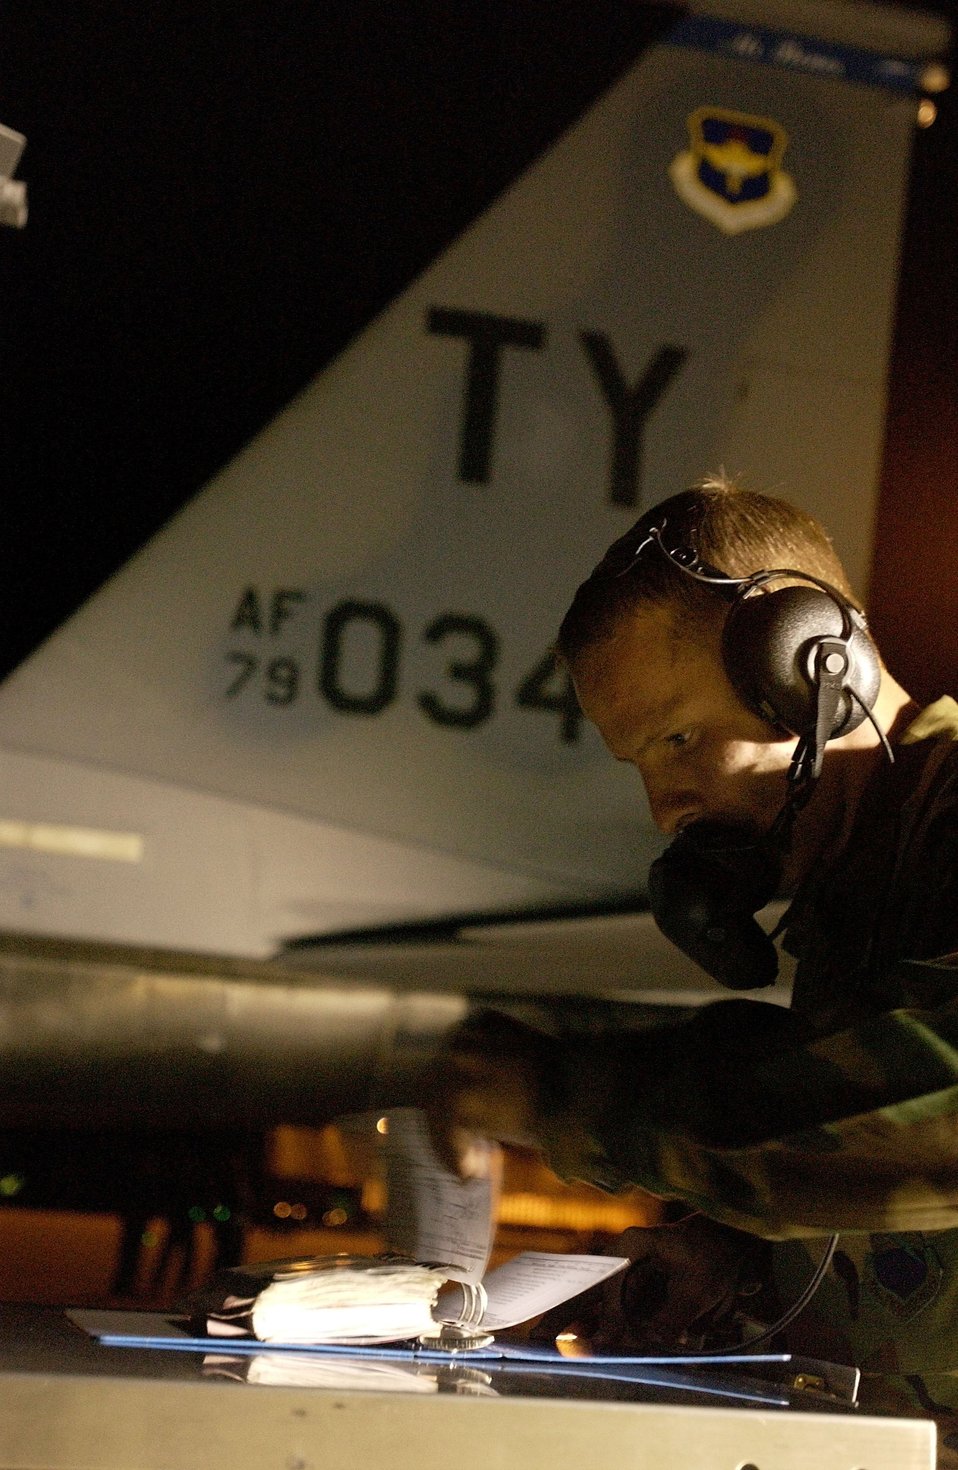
William Tell 2004

TYNDALL AIR FORCE BASE, Fla. -- Senior Airman Audie Murphy pre-flights an F-15 Eagle during William Tell 2004 here Nov. 8. The two weeks of competition will challenge pilots, weapons loaders and maintainers from five F-15 fighter wings. Airman Murphy is a crew chief assigned to the 95th Aircraft Maintenance Unit.